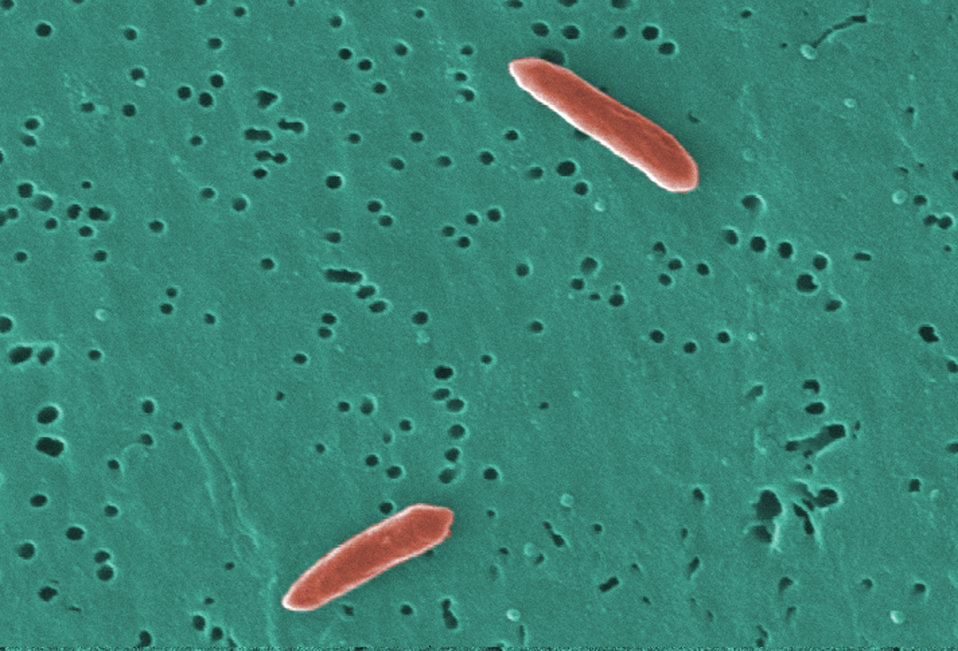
This digitally-colorized scanning electron micrograph (SEM) depicted two Gram-negative Sebaldella termitidis bacteria.